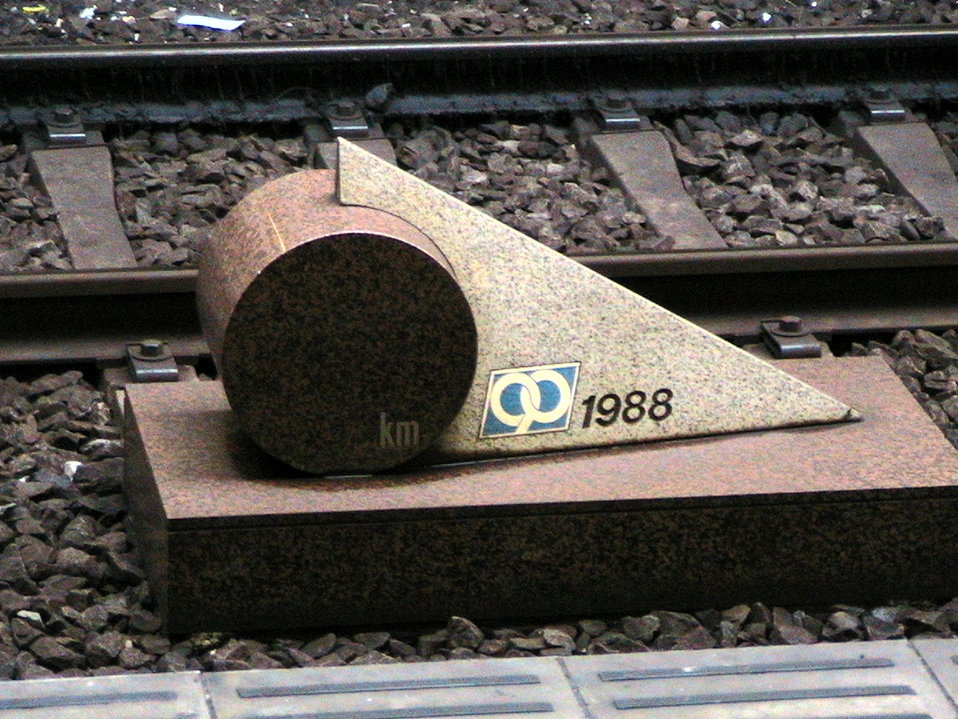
日本語: 0km距離標 京急品川駅にて投稿者撮影。撮影日時 2006年7月25日